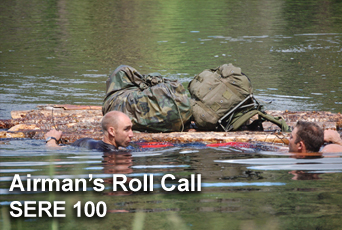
Airman's Roll Call highlights SERE 100 CBT

This week's Airman's Roll Call focuses on training Airmen need to perform duties in non-traditional roles. Air Force leaders are broadening the focus of survival, evasion, resistance and escape training by using a training program called SERE 100. The training is mandatory for all Airmen.